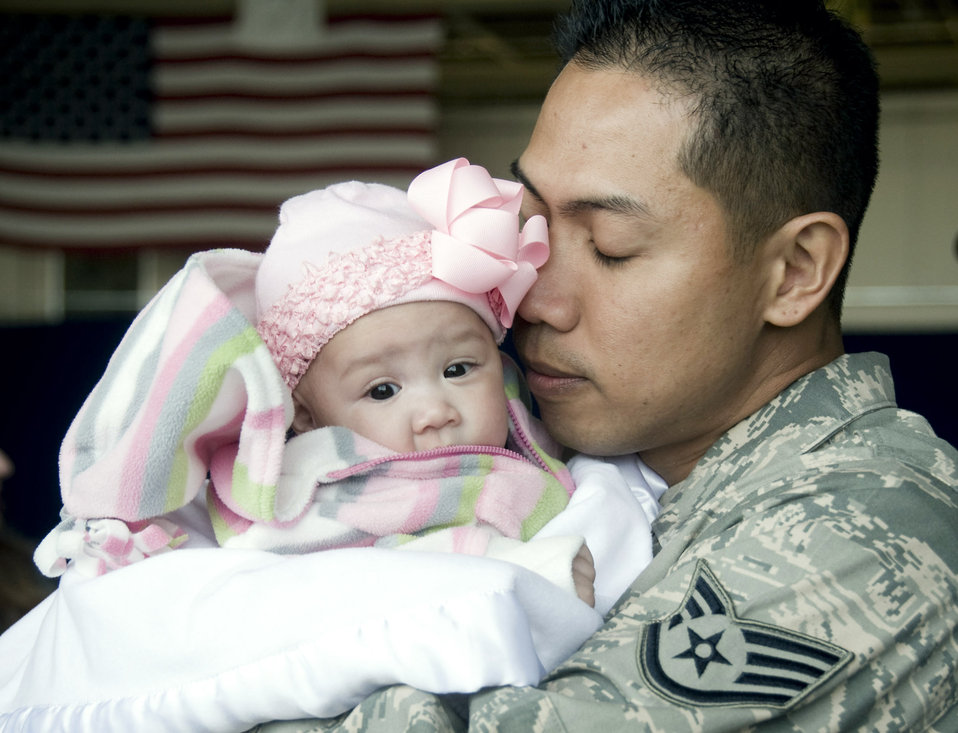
Misawa officials welcome home 300 deployed Airmen

Staff Sgt. Dennis Horlador embraces his newborn, Natyala, after returning March 1 to Misawa Air Base, Japan. Sergeant Horlador, assigned to the 35th Operations Group, missed the birth of his daughter while deployed to Joint Base Balad, Iraq.